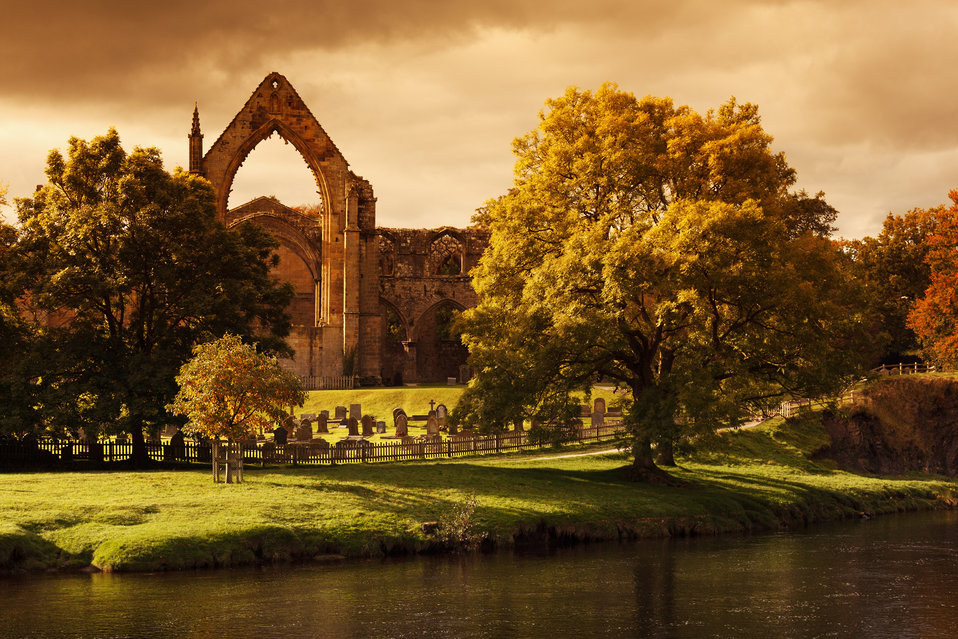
Bolton abbey at sunset in autumn.